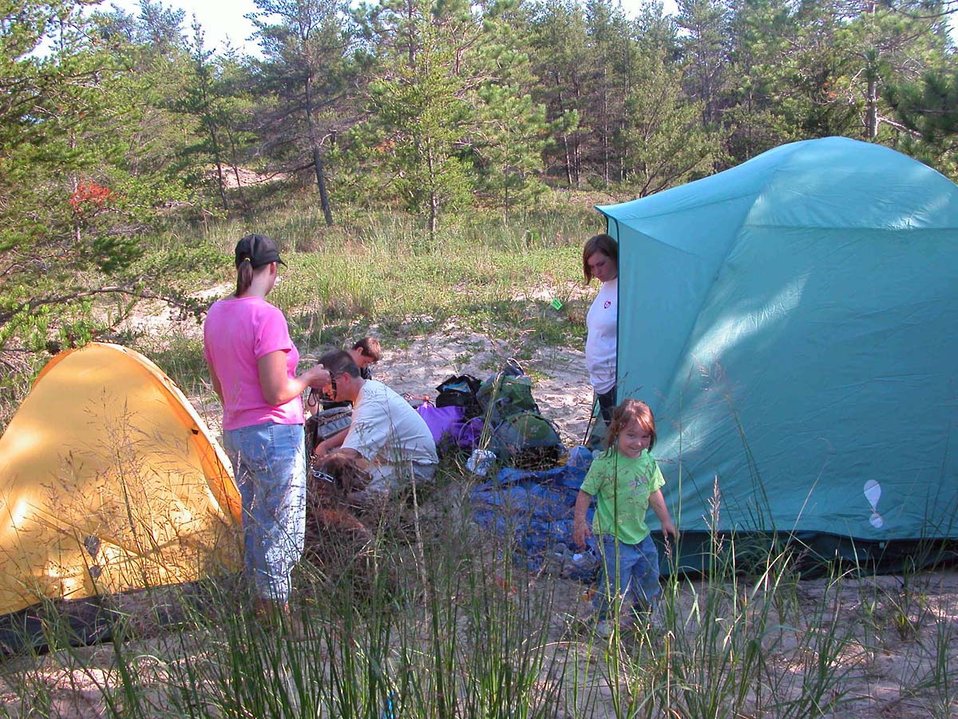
GO Day family camping

A family sets up camp on the 3,450-acre Nordhouse Dunes Wilderness Area in Michigan’s lower peninsula.